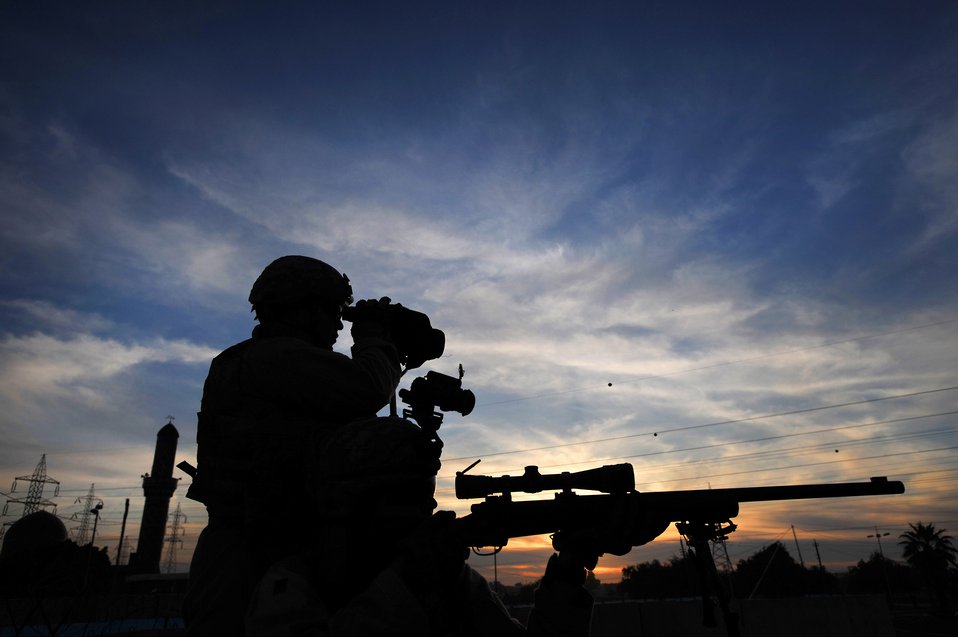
Eagle eyes

U.S. Airmen Sharpshooters assigned to the Close Precision Engagement Team scan the horizon for possible threats Dec. 07, in the Doura community of southern Baghdad. The Airmen are attached 732 Expeditionary Security Forces Squadron, 1st Brigade Combat Team, 4th Infantry Division.